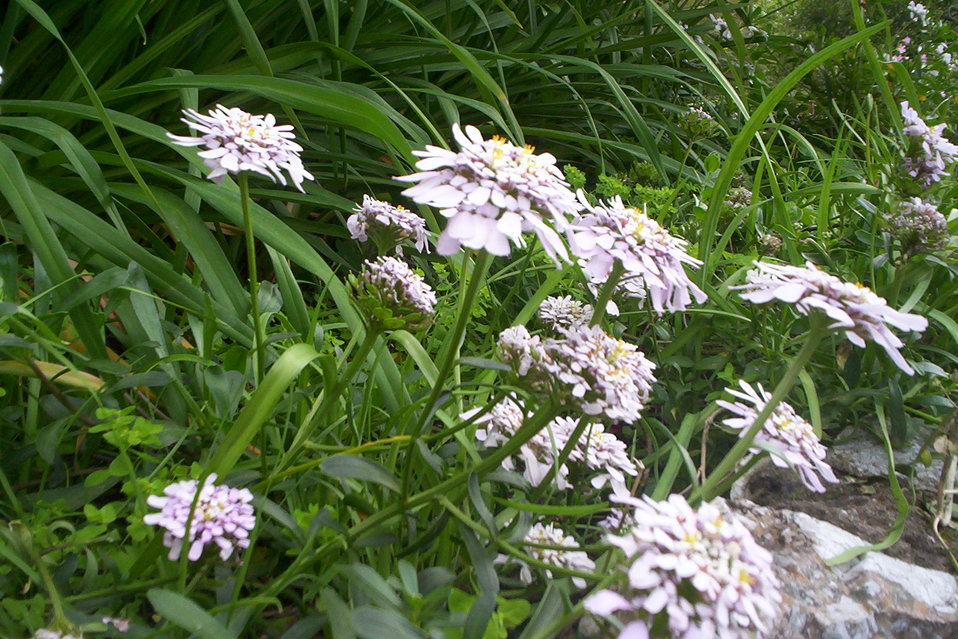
A photograph of the Gibraltar candytuft taken in the Alameda Gardens (Gibraltar) on the 1st January 2003.